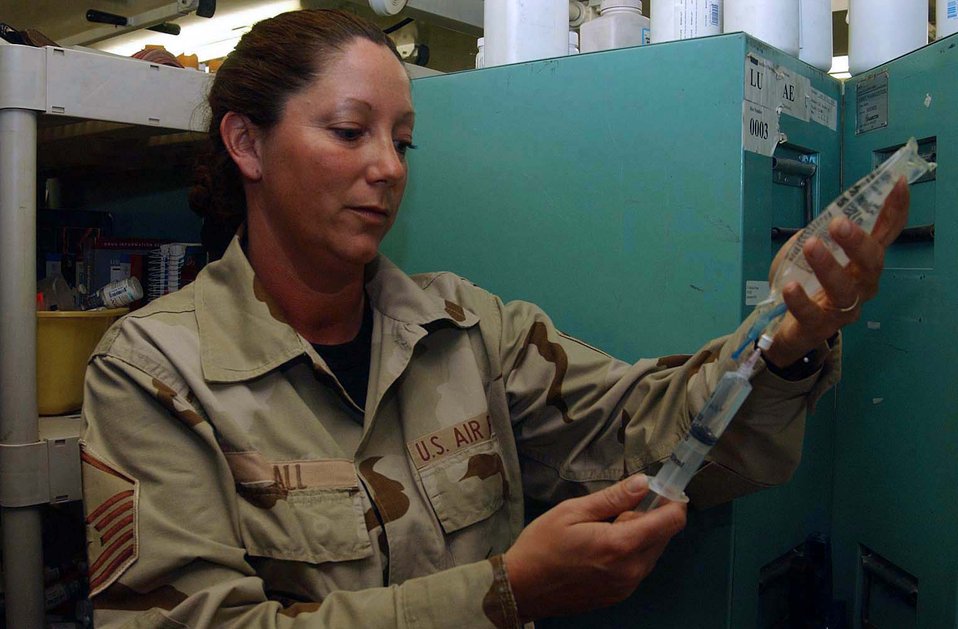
Balad's pharmacy techs help save lives

BALAD AIR BASE, Iraq -- Master Sgt. Rhonda Ball prepares an IV at the pharmacy here. She is assigned to the 332nd Expeditionary Medical Support Squadron.